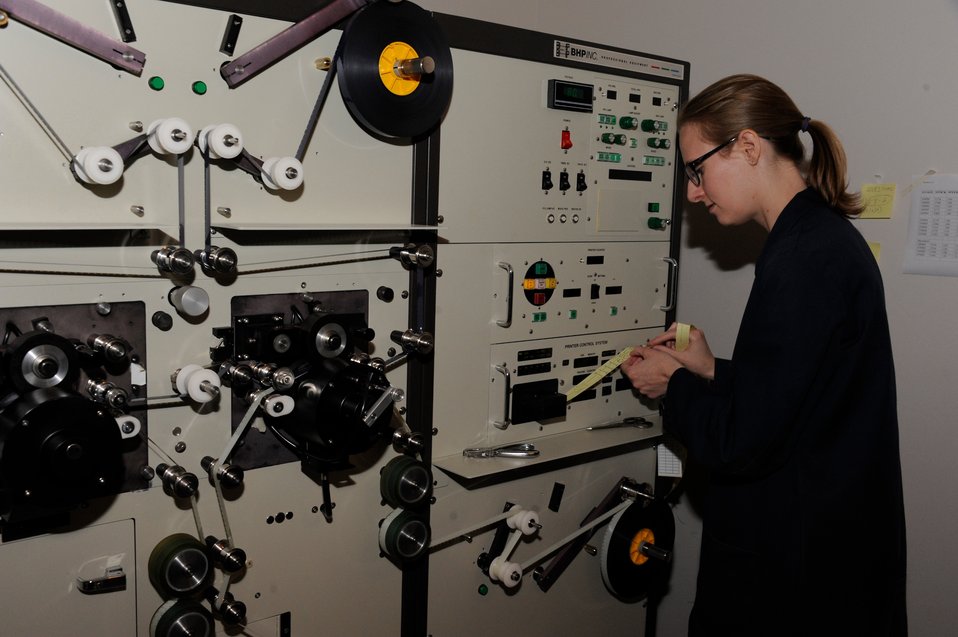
Heidi Holmstrom runs a data tape through a BHP contact printer.; Location: Archives 2 - Motion Picture Preservation Lab, College Park, MD